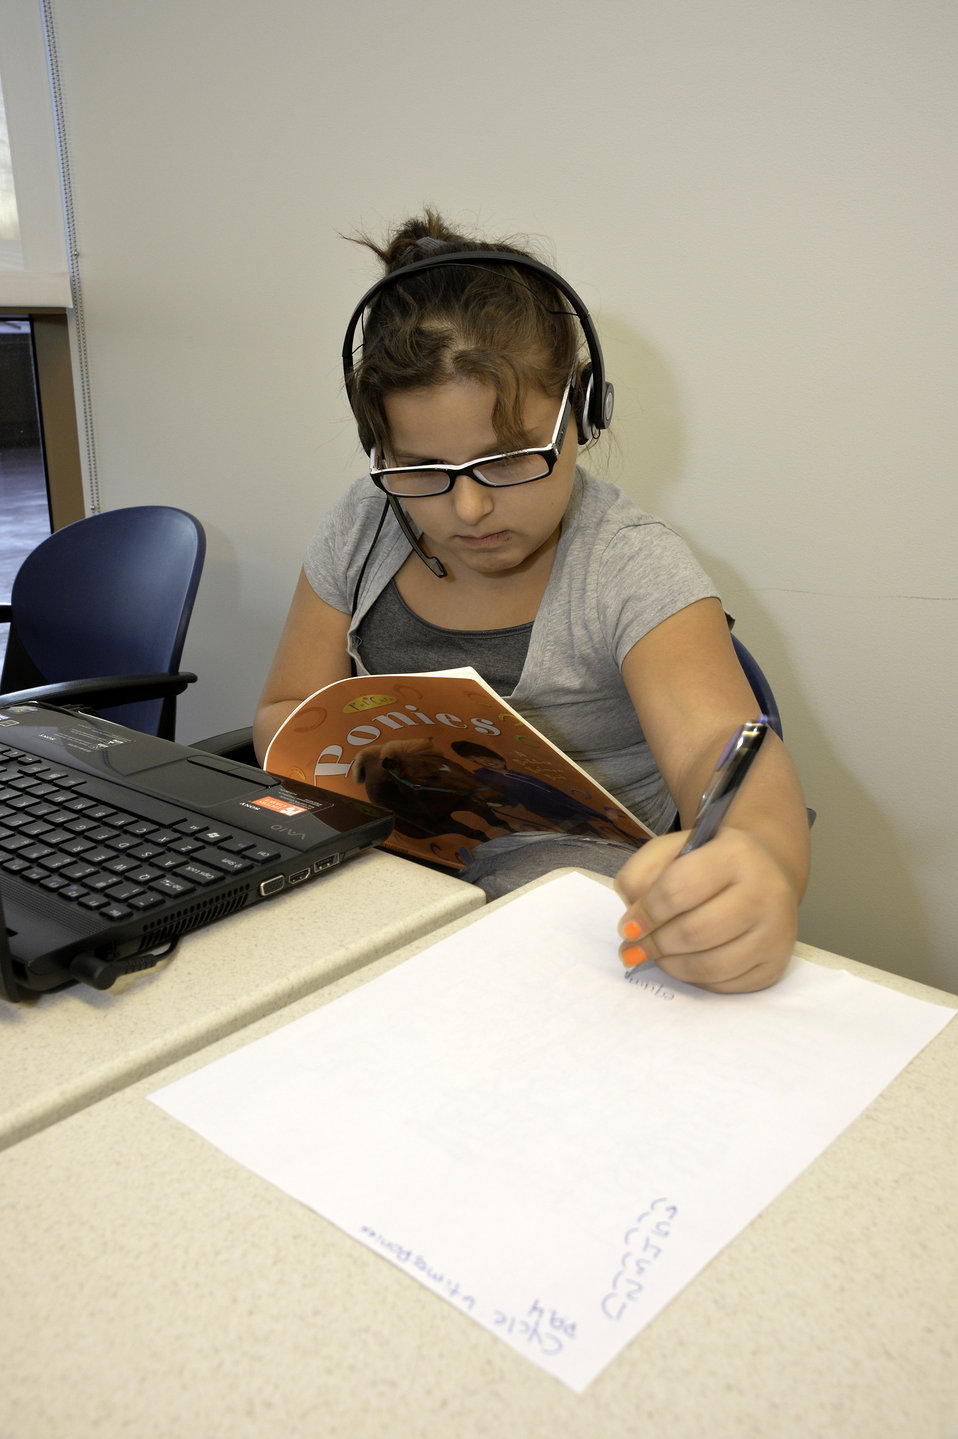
Mohegan youth enrolled in after-school program, work on computers with Internet access to help them improve their reading skills at the Mohegan Tribe Community Center and Government Building in Uncasville, CT on Nov. 19, 2013. A U.S. Department of Agriculture (USDA) Rural Development (RD) Community Facility Loan was provided to the Mohegan Tribe for the construction of the Mohegan Tribe Community Center and Government Building in Uncasville, CT. USDA’s RD Community Facilities Programs makes and guarantees loans to develop essential community facilities in rural areas and towns of up to 20,000 in population. Loans and guarantees are available to public entities such as municipalities, counties, parishes, boroughs, and special-purpose districts, as well as to non-profit corporations and tribal governments. The 160,000 square foot building Center hosts an exhibit celebrating federal recognition, history of Mohegan Chiefs, a new Library and Archives space, new Arts and Crafts room, a new gymnasium, and a new community room to enjoy food and family. The Center will continue the Tribe’s plan for growth and meeting the needs of its members.